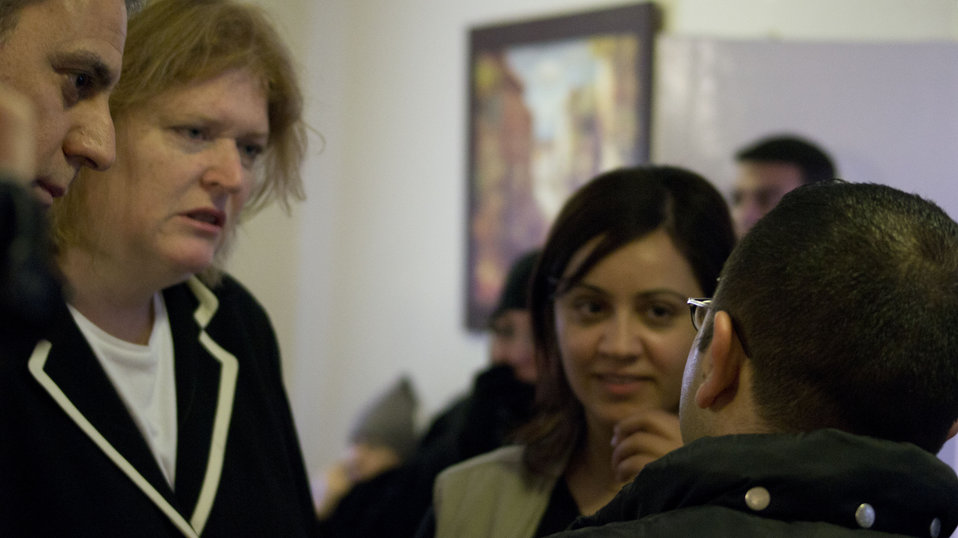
Assistant Secretary Richard Visits a World Food Programme Distribution Center in Amman

Assistant Secretary of State for Population, Refugees, and Migration Anne C. Richard visits a World Food Programme Distribution Center in Amman, Jordan, where refugees living in host communities receive vouchers on January 27, 2013. They can use these vouchers to shop for their families in local supermarkets.